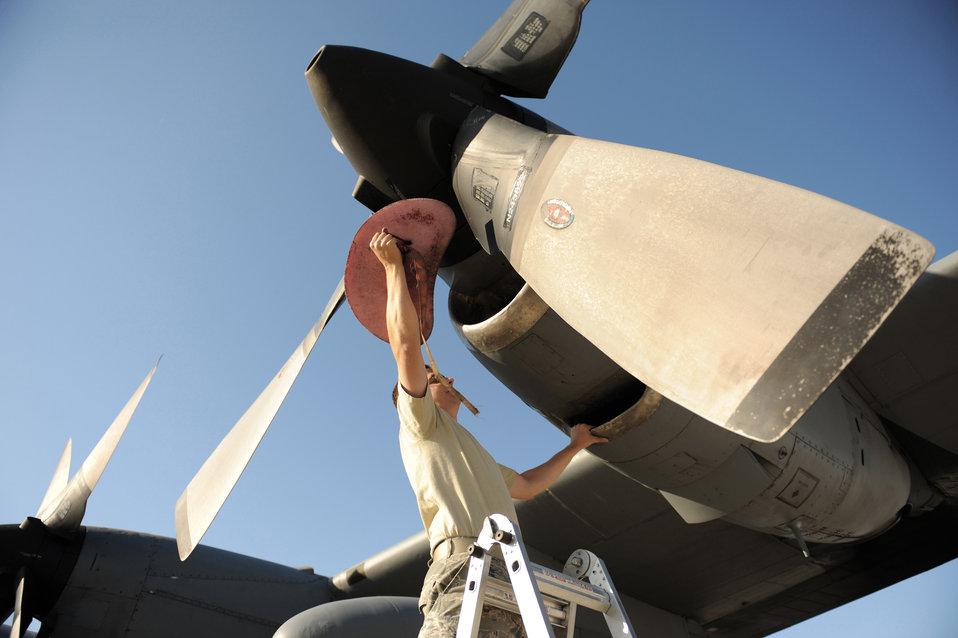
Testing mobility forces

Staff. Sgt. Eric Jancaitis removes an engine intake plug May 20 in preparation for the Mobility Air Forces Exercise at Nellis AFB, Nev. He is a C-130 Hercules crew chief assigned to the 314th Aircraft Maintenance Squadron at Little Rock Air Force Base, Ark.